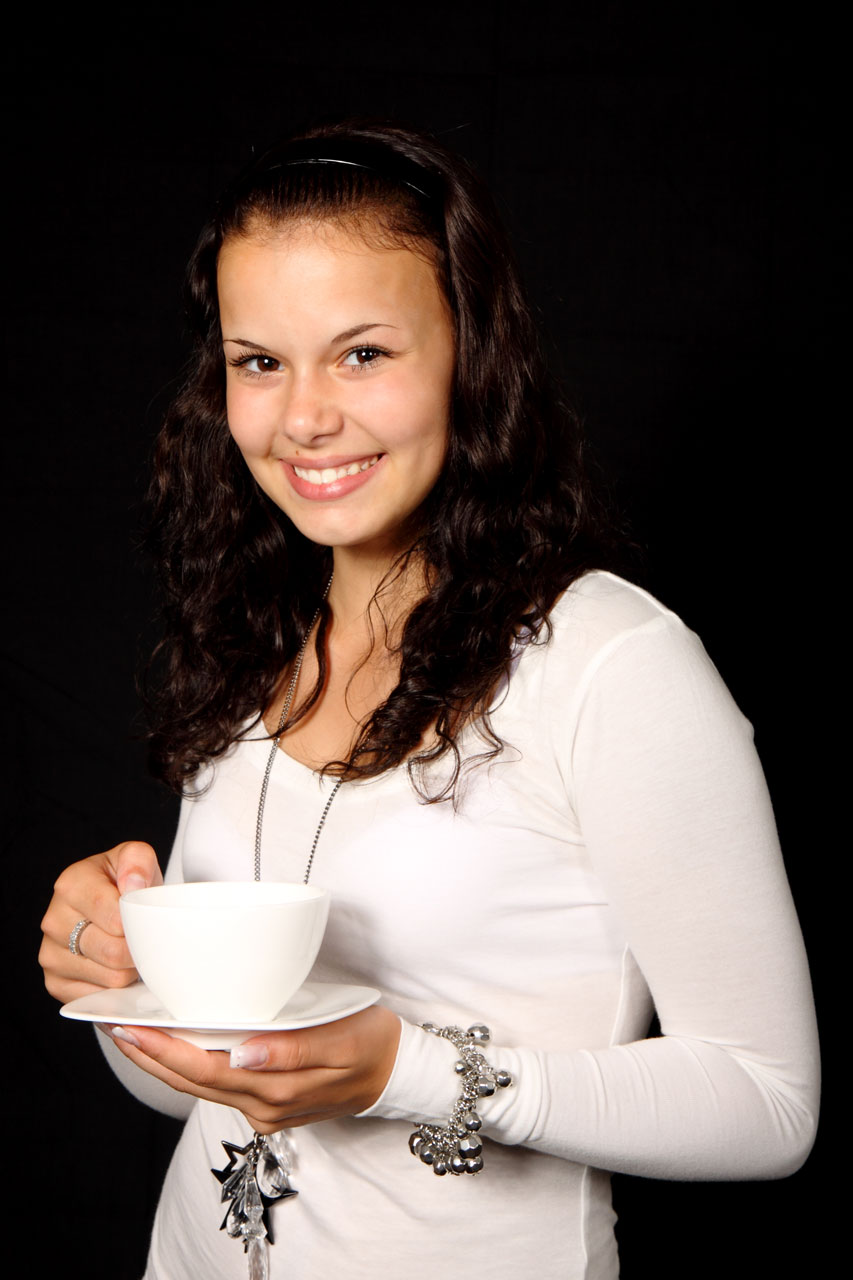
Young woman with cup of tea.